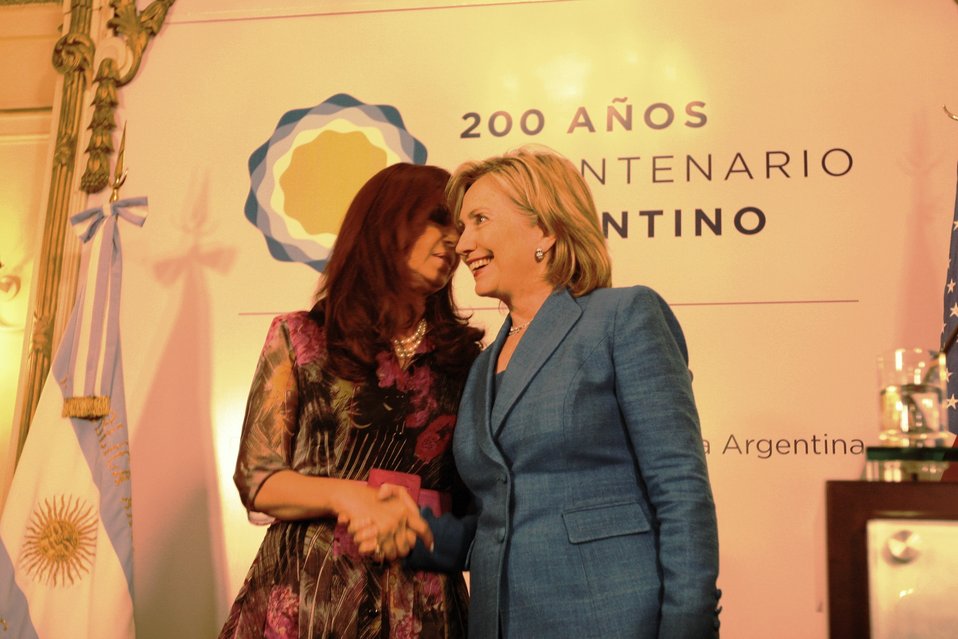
Secretary Clinton Visits Buenos Aires, Argentina

U.S. Secretary of State Hillary Rodham Clinton shakes hands with Argentine President Cristina Fernández de Kirchner at the Casa Rosada in Buenos Aires, Argentina March 1, 2010.